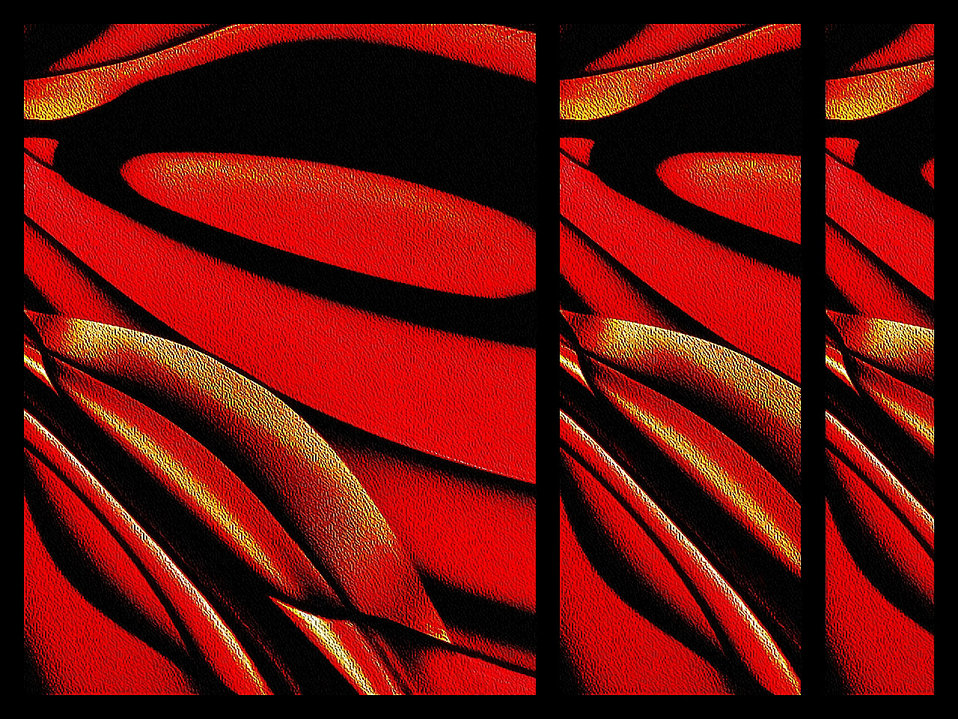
Red bud, rough structure.